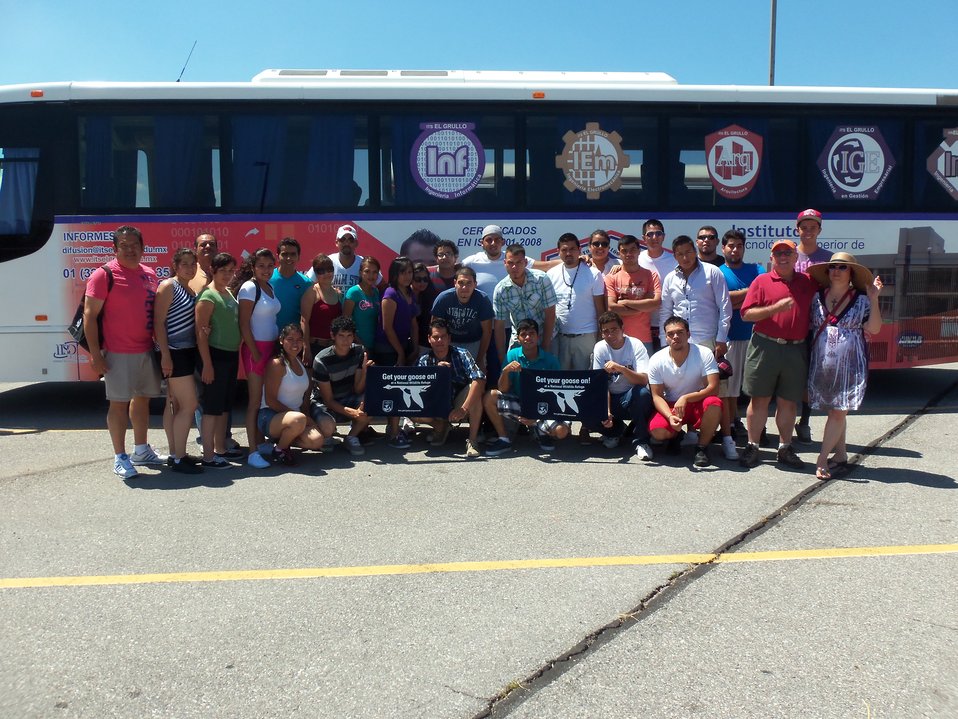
Get Your Goose On!

Wichita Mountains National Wildlife Refuge in Oklahoma.